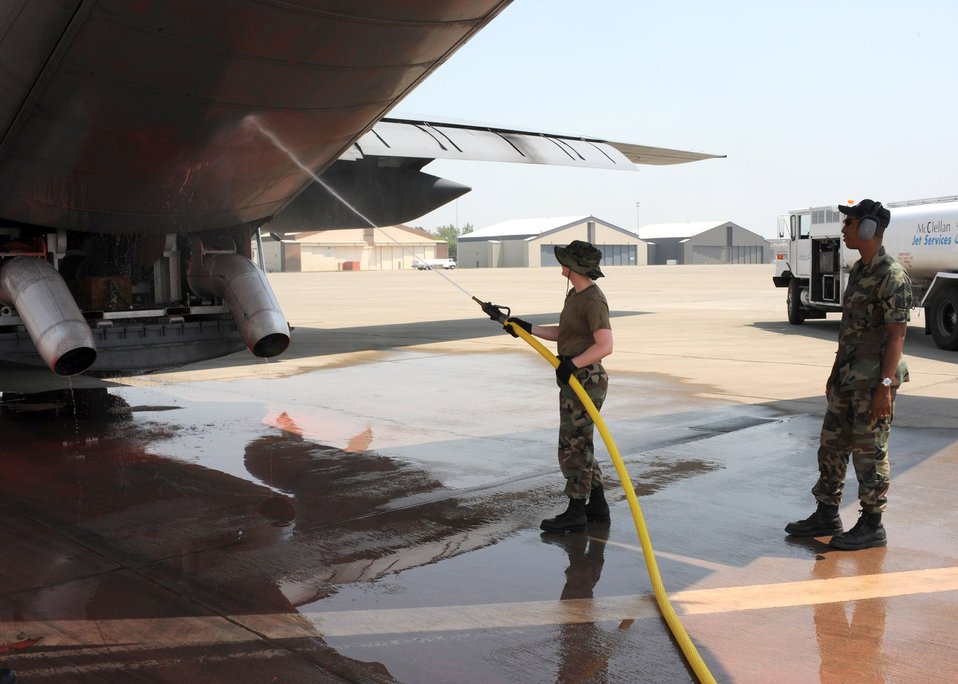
MAFFS 'safety man' keeps people, environment safe

Senior Master Sgt. Aaron Smith watches for safety issues as an Airman washes fire retardant off the cargo doors of a C-130 Hercules equipped with the modular airborne fire fighting system at McClellan Airfield, Calif., July 8. Sergeant Smith's job is to ensure Airmen and equipment are safe during firefighting operations. The 153rd AW is conducting firefighting operations as part of the 302nd Air Expeditionary Group. Sergeant Smith is assigned to the 153rd Airlift Wing of the Wyoming Air National Guard.